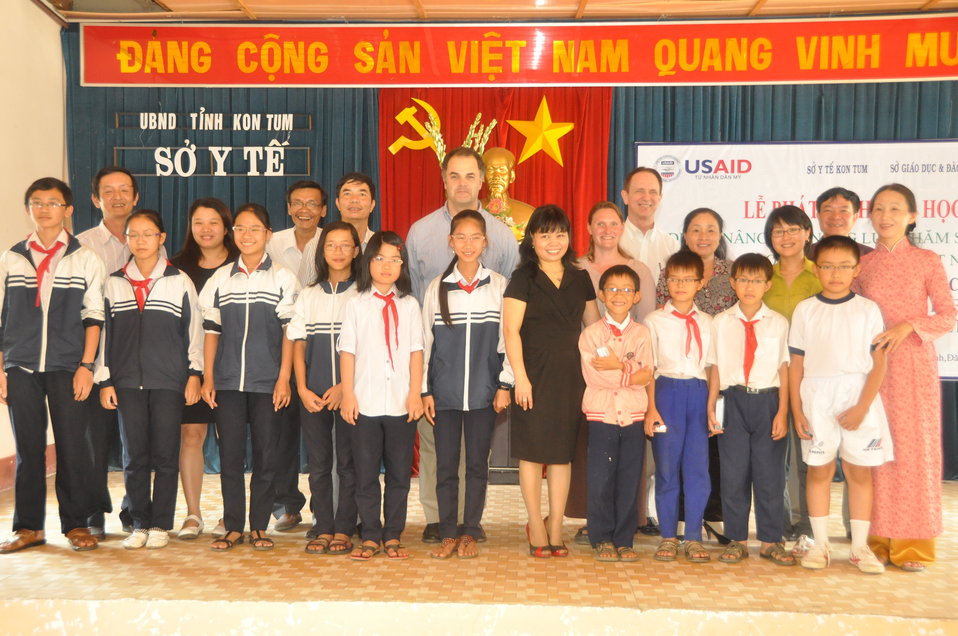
School children in Dak To, Kon Tum Province, receive eyeglasses under a program supported by USAID and partners HKI and World Learning